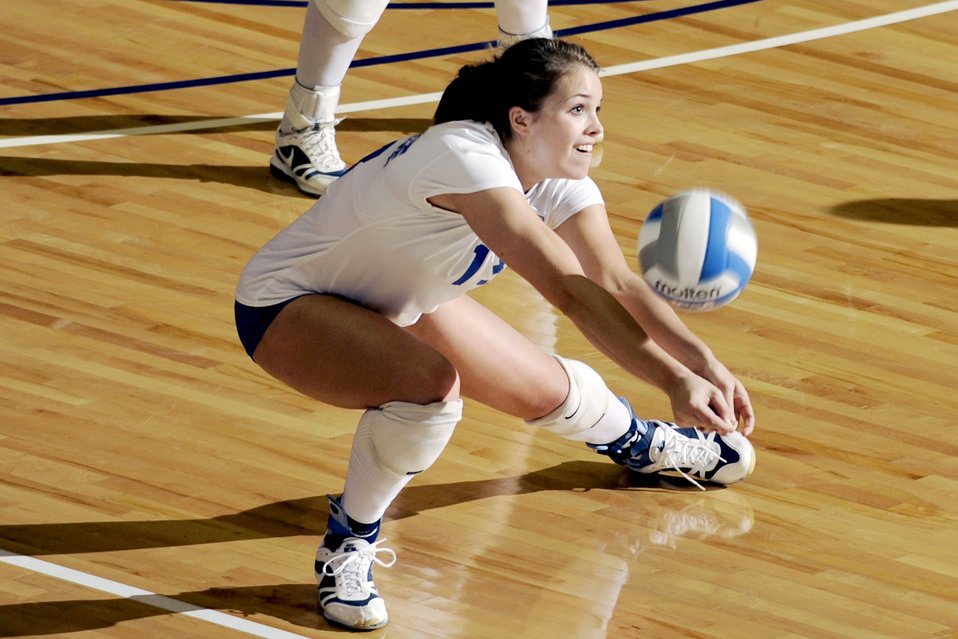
Academy women's volleyball team ends season

U.S. Air Force Academy junior Caroline Kurtz bumps the ball during the final match of the season against Utah Nov. 21, 2009, at Clune Arena at the Academy. The Falcons lost the three-set decision 25-18, 25-16, and 27-25.